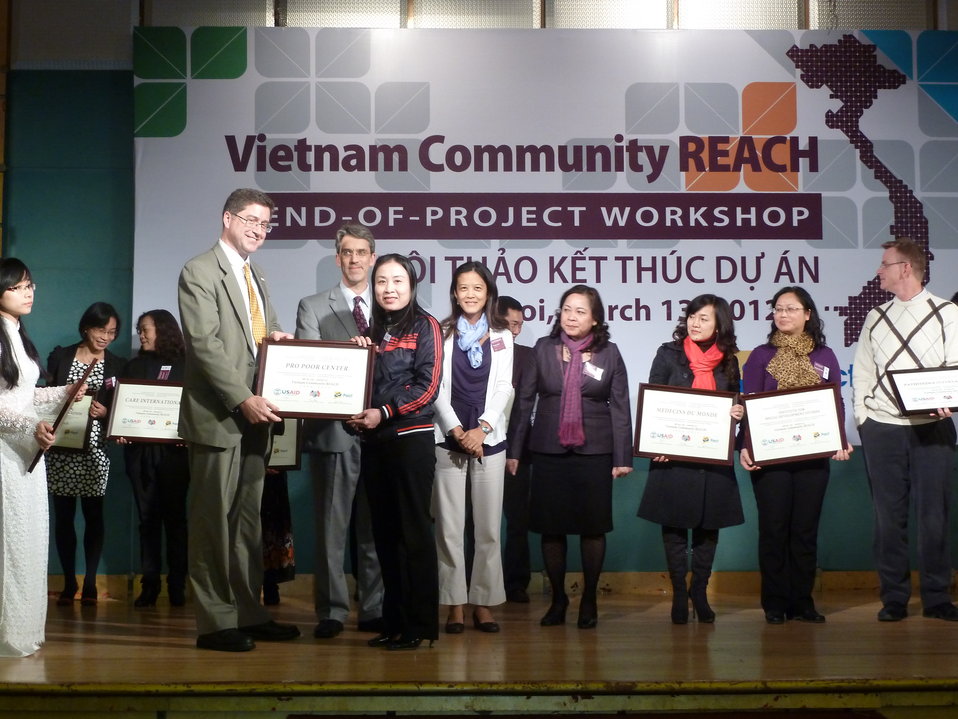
USAID, PEPFAR, and Pact award certificates to local and international partners for their work in addressing HIV in Vietnam

Community REACH project close-out with USAID and implementing partner, Pact